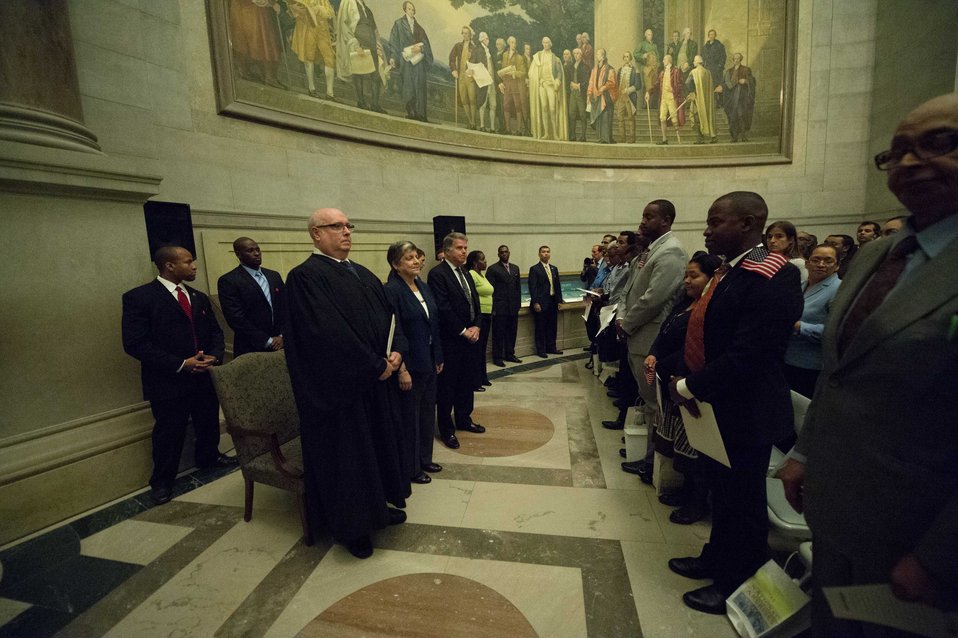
Constitution Day Naturalization Ceremony

The Honorable Royce Lamberth, Secretary of Homeland Security Janet Napolitano, and Archivist of the United States David S. Ferriero.